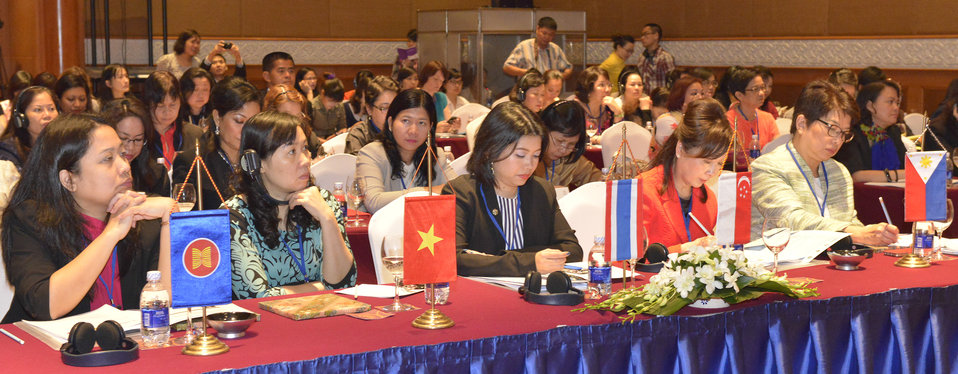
Launch of the ASEAN Women Entrepreneur's Network

USAID/Vietnam